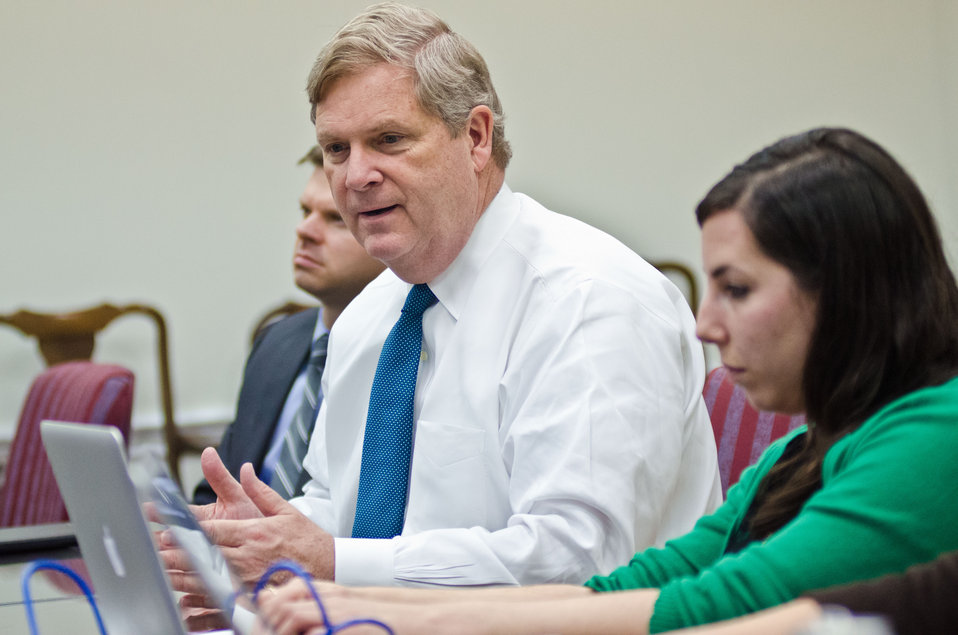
Agriculture Secretary Tom Vilsack (center) composes an Twitter message, that will be posted by New Media Content Specialist Rebecca Frank (right) during his live and online Virtual Office Hours Twitter session, in Washington, D.C. on, Monday, December, 17, 2012. Agriculture Deputy Administrator Farm Service Agency Brandon Willis, left, studies various incoming questions and provides input. Online questions about the important role of rural America to the national and global economy, increasing agricultural opportunities in U.S. communities, and the importance of passing a five-year Farm Bill are addressed during this live Twitter chat. Some of the responses address food and nutrition, agricultural research, urban agriculture, bio-based products and how rural communities can get more involved in rural policy, to name a few. Questions were submitted live and in advance to the @USDA Twitter account using the hashtag #AskUSDA.